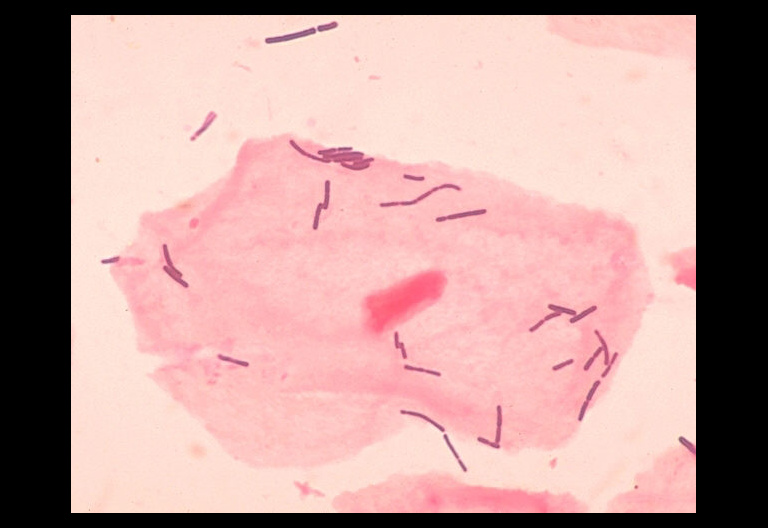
Lactobacillus organisms and vaginal squamous epithelial cell.